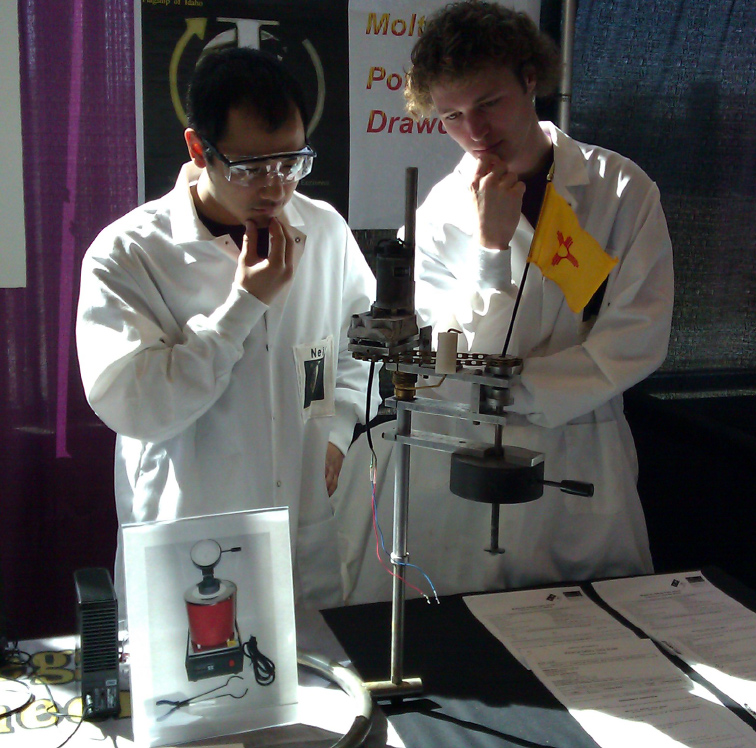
CBFO Members Are DOE Judges at International Environmental Design Contest

Contestants think it through at the 2012 WERC IEDC. The annual competition includes college students from universities worldwide, who showcase their engineering design solutions. Their solutions are judged by industry and academic professionals.